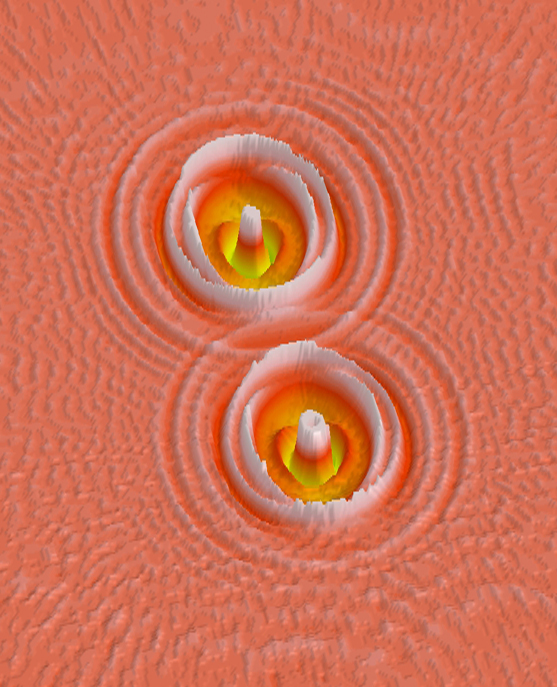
Synchronized Nano-oscillators

A simulation made with NIST micromagnetic software shows the interaction of 'spin waves' emitted by two nano-oscillators that generate microwave signals. The ability of these tiny spintronic devices to spontaneously synchronize their emissions may lead to smaller, cheaper wireless communications components.